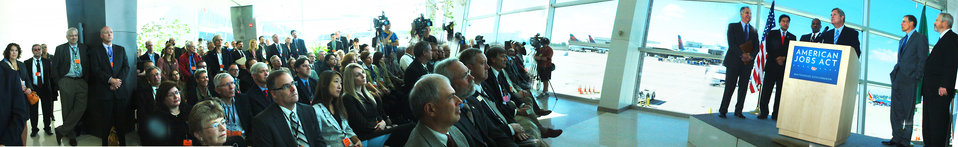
Agriculture Secretary Tom Vilsack speaking at a White House Business Council event highlighting the American Jobs Act at the airport in Seattle, WA, on Wednesday, September 28, 2011.